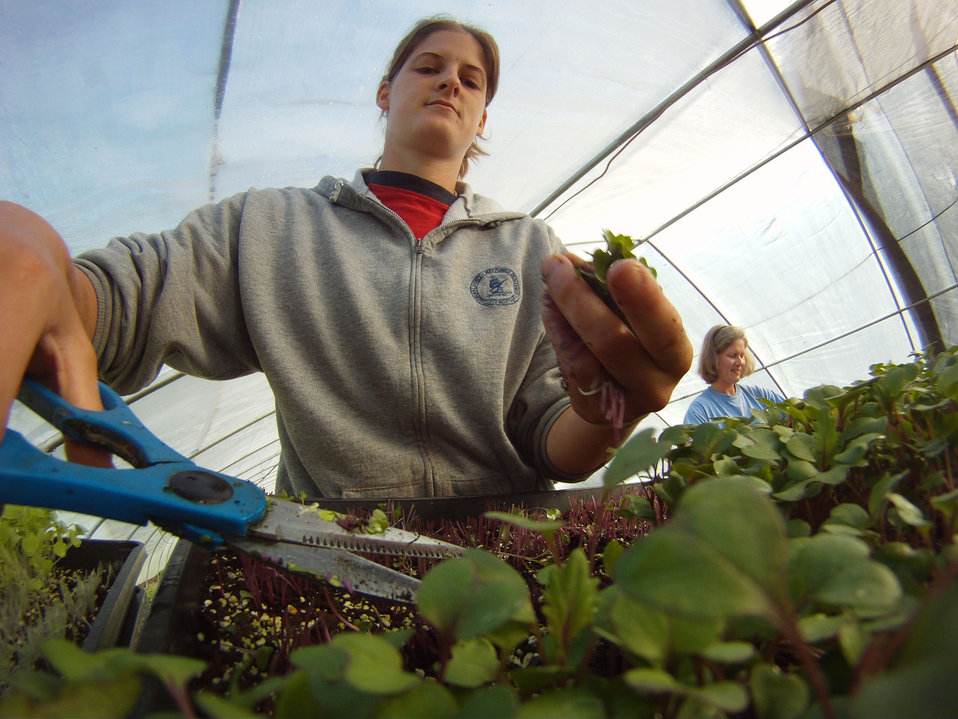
Kate Lainhart (left) and Rebecca Evans Chadwick gently gathers a small number of shungiku micro greens before she cuts them at the perfect bite-sized length for Manakintowne Specialty Growers, a 21-acre farm in Powhatan County, Virginia, on Friday, May 6, 2011. The farm where Jo Pendergraph, her family and team raise specialty produce for chefs and markets of Richmond, Charlottesville and Williamsburg, VA area. This includes the online food hub of Lulus Local Food served by the Fall Line Farms cooperative. This is one of the farms that chefs get those seemingly unique greens such as French Sorrel, Pea Shoots, Frisee, Tat soi, Mizuna, Pink/green radish shoots, Sunflower shoots, Baby red mustard, Tuscan Kale, Beet greens. All harvested by hand and scissors. As well as micro greens such as Pak choi, Tat soi, Mizuna, Purple kohlrabi, Shungiku (edible chrysanthemum), Ruby chard, Purple/Daikon/Triton radish, Red amaranth and Bull's Blood Beet. Edible flowers such as African Blue Basil, Nasturtiums, Johnny Jump Ups, and Chive blossoms Dianthus (pinks) are grown here. The seasonal choices are listed by suppliers and ordered by members on Lulus Local Food website, the food is distributed to pick-up points in the Richmond, VA area. They also offer a wide variety of household food staples and specialty fruits, vegetables, meats, soaps, eggs, cheeses, flowers, honey, pastas, sauces, syrups, baked goods, mushrooms, flour and grains from and for the Richmond. VA area.